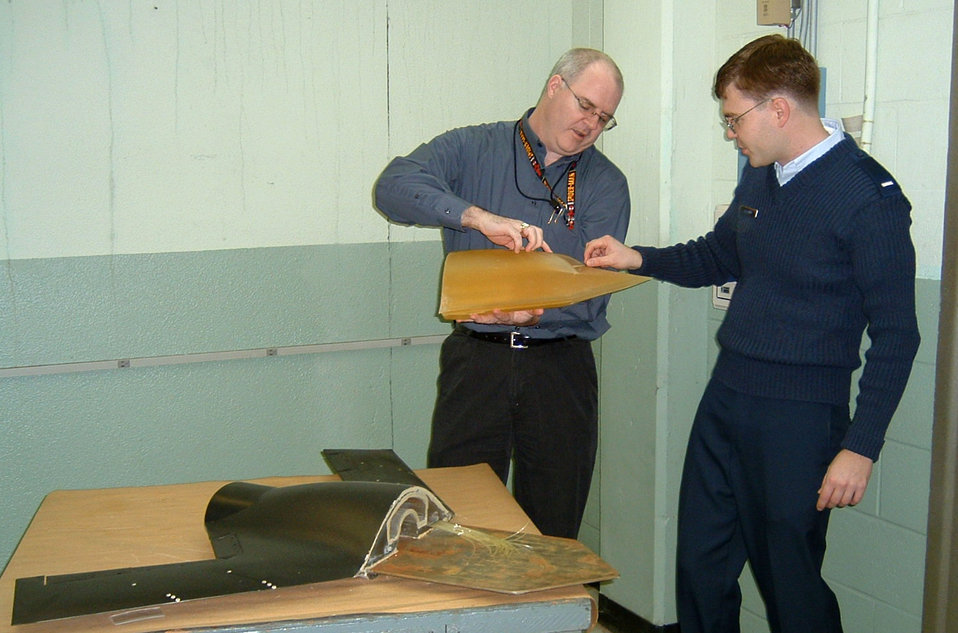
Rapid prototyping speeds up design assessment

WRIGHT-PATTERSON AIR FORCE BASE, Ohio (AFPN) -- Dr. Charles Tyler (left) and 1st Lt. Erik Saladin examine an X-45A unmanned combat air vehicle model created using rapid prototyping technology.